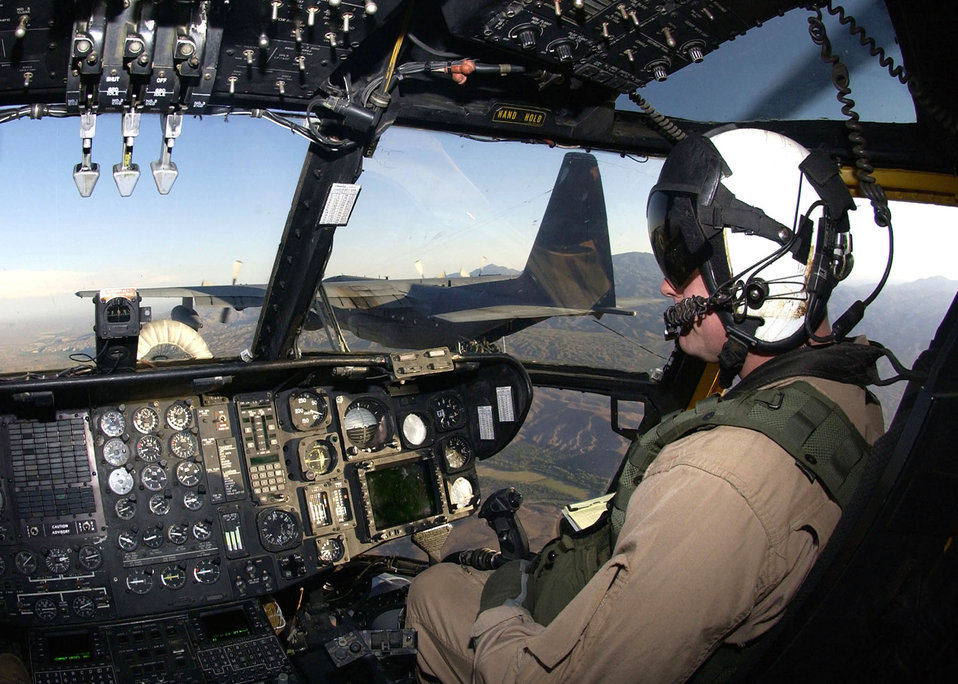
Snowbird operations

Marine Maj. David Montesano guides his CH-53E Super Stallion helicopter while taking on fuel from an HC-130 Hercules from the 79th Rescue Squadron at Davis-Monthan Air Force Base, Ariz. The major and the CH-53E are assigned to Marine Heavy Helicopter Squadron 769 at Edwards Air Force Base, Calif.